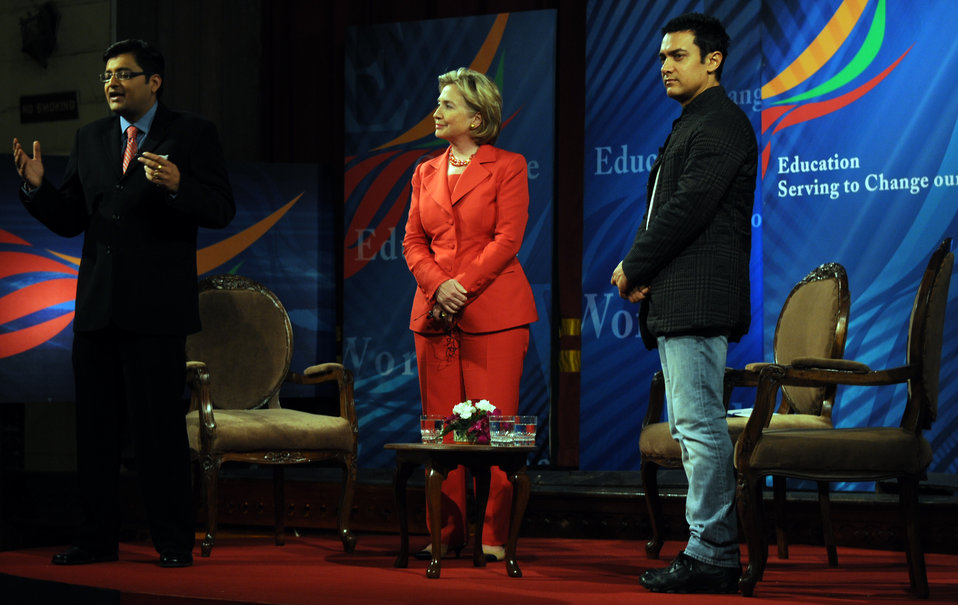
Secretary Clinton Speaks About Education and Community Service

Indian news channel Times Now Editor Arnab Goswami introduces U.S. Secretary of State Hillary Rodham Clinton and Bollywood celebrity Aamir Khan at an event to dedicated to education and community service. Secretary Clinton and Khan spoke about Teach India and Teach for India, two Indian education NGOs, with an audience of volunteers and students of St. Xavier’s college in Mumbai, India July 18, 2009.